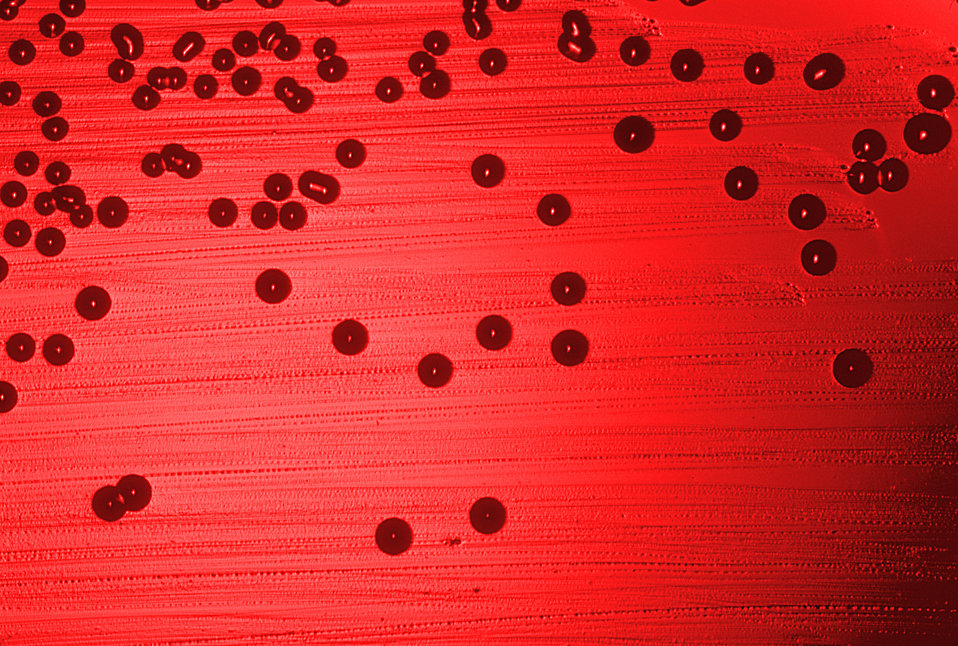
Blood agar plate culture of Haemophilus influenzae.